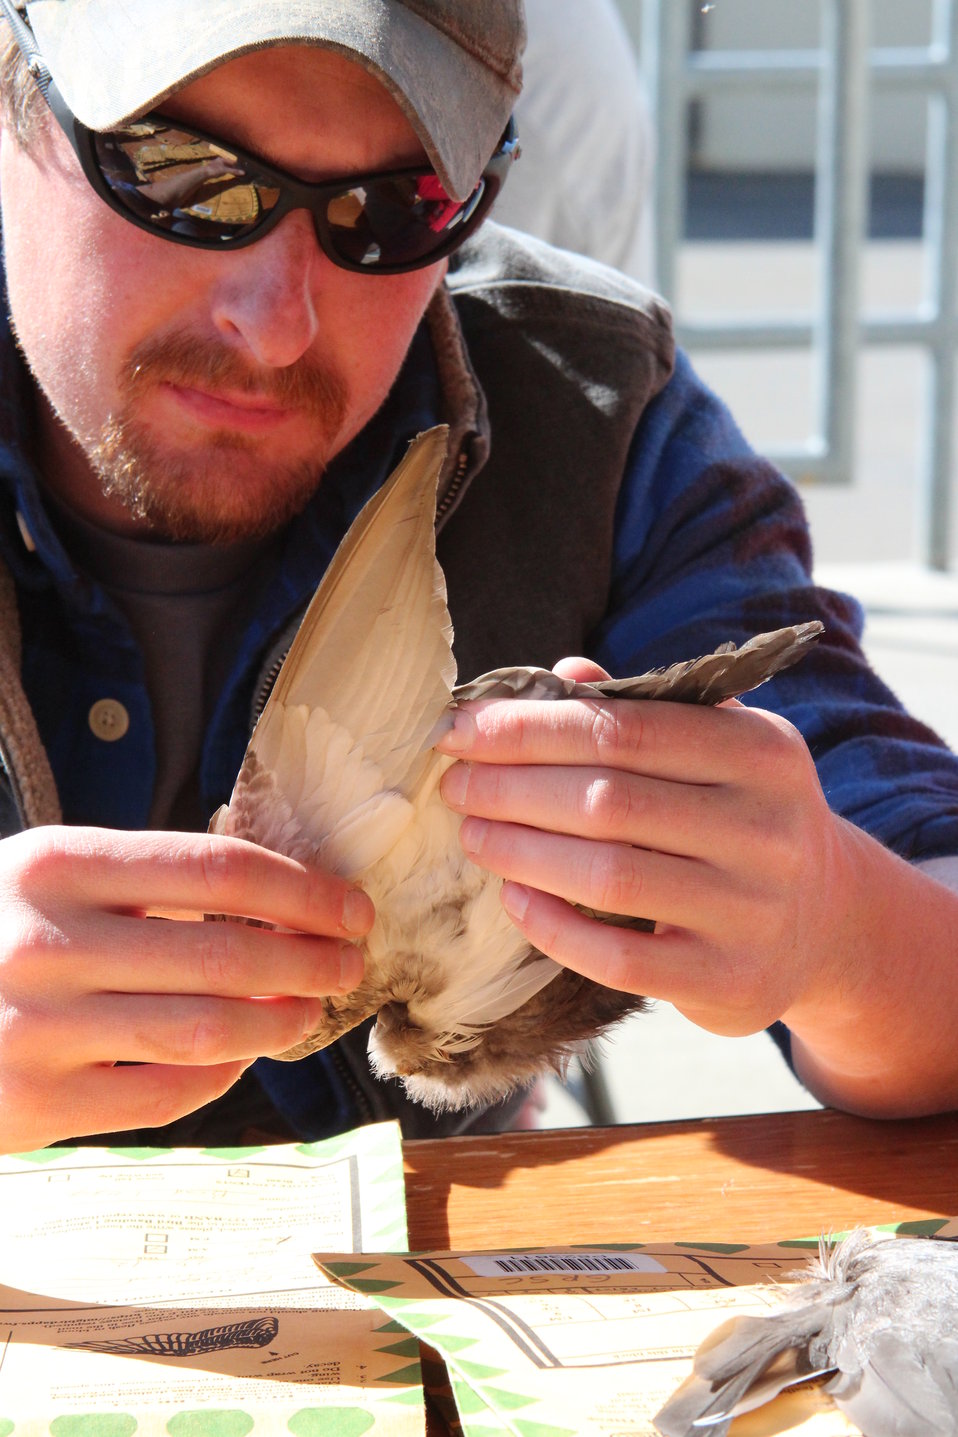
Pacific Flyway WingBee

U.S. Fish and Wildlife Service employees and volunteers at the 2013 Pacific Flyway WingBee identify duck wings mailed in by hunters. These wings are one of the most accurate ways to check waterfowl populations and can be an early indicator of breeding problems.